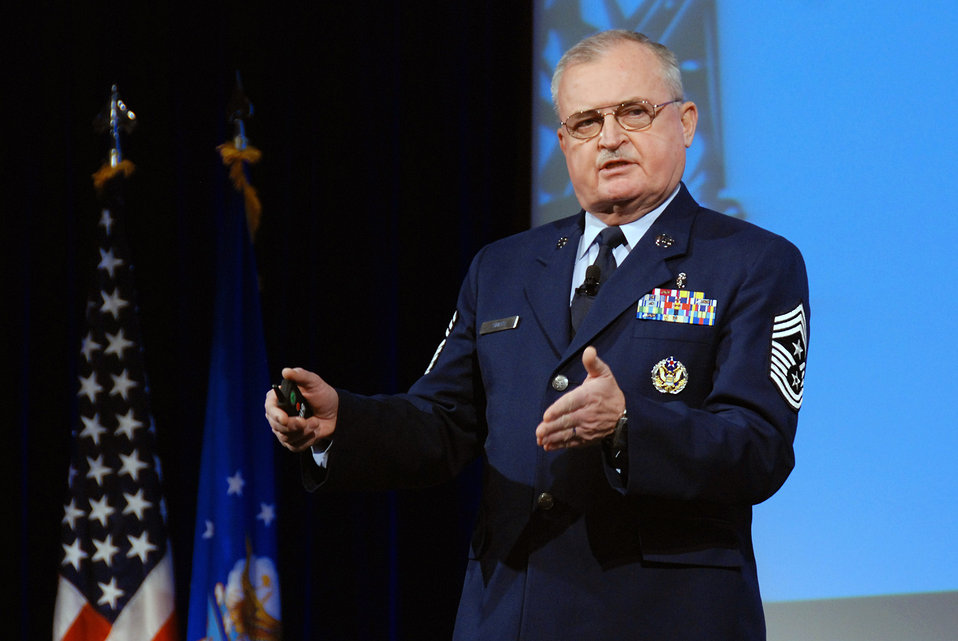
Guard members to be honored through Salute Campaign

Chief Master Sgt. Richard Smith talks to Air National Guard senior officers and noncommissioned officers about the Hometown Heroes Salute recognition program Nov. 20 at the National Conference Center outside Washington, D.C. Chief Smith is the command chief of the Air National Guard.